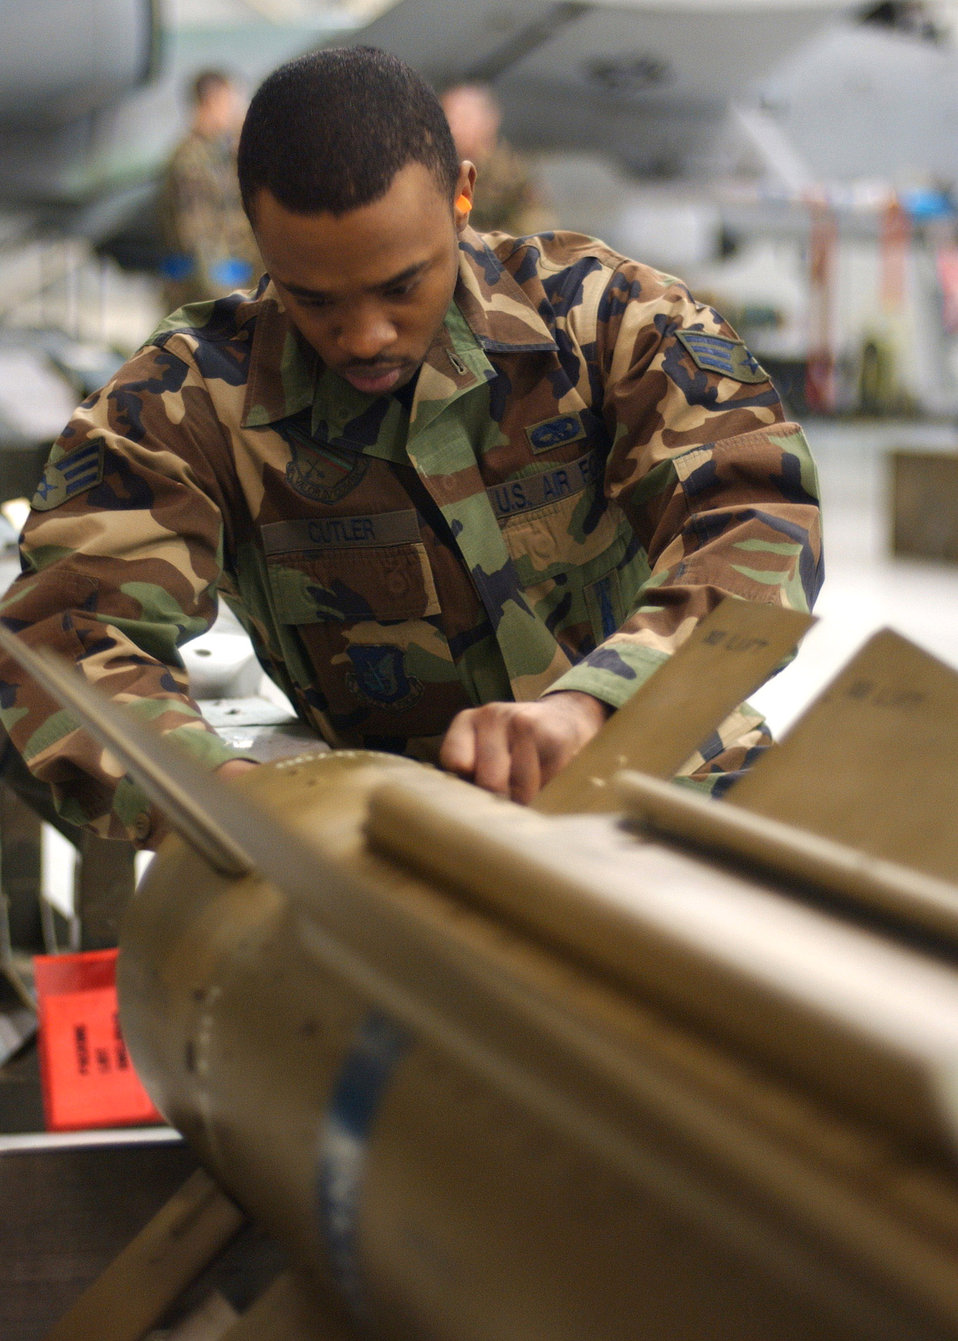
Competing for load crew honors

Senior Airman Corneilius Cutler prepares an air-to-ground missile to be loaded onto an F-16 Fighting Falcon during the Weapons Standardization Load Crew of the Year Competition Jan. 11at Eielson Air Force Base, Alaska . The competition evaluates technical proficiency, safety procedures and overall time. Airman Cutler is assigned to the 18th Aircraft Maintenance Unit. The 18th AMU's overall time was 56 minutes and 37 seconds.